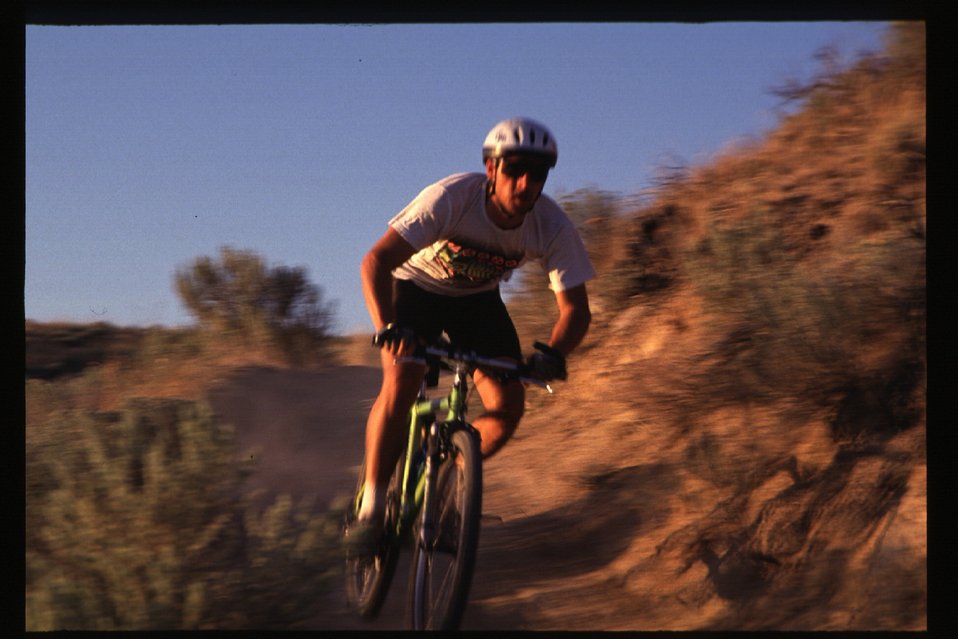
Bikers on Boise Foothills Boise Front bicyclists Four Rivers Field Office LSRD Lower Snake River District